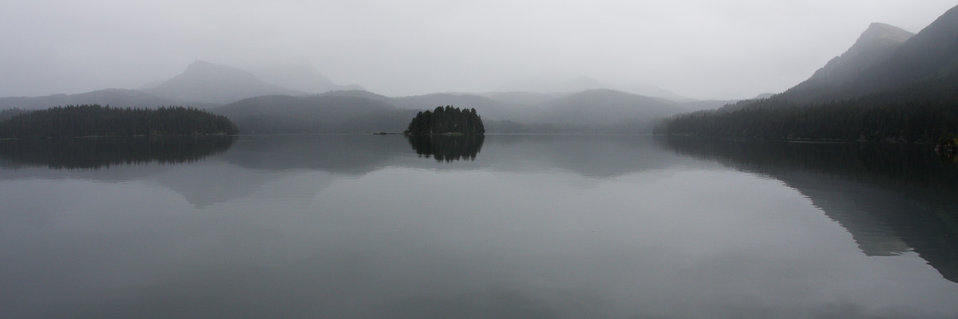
Fog in Blue Fox Bay

Lisa Hupp/USFWS